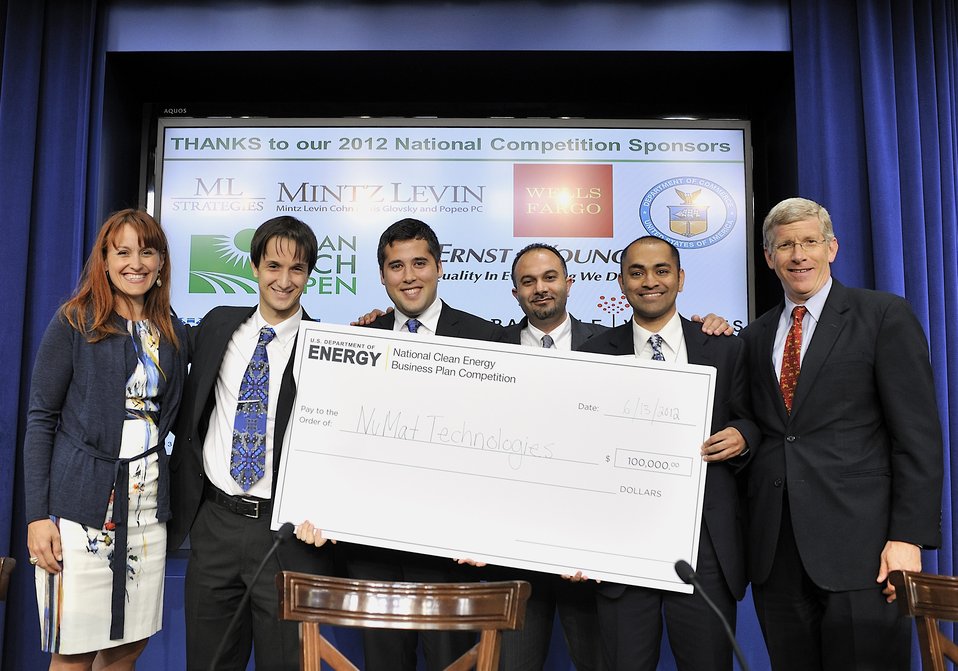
National Clean Energy Business Plan Competition

The National Clean Energy Business Plan Competition inspired nearly 300 university teams across the country to create new businesses to commercialize promising energy technologies developed at U.S. universities and the National Laboratories.

After pitching their business plans to panels of judges at the regional semifinals and finals, six teams advanced to the national competition for a chance to compete in the grand prize pitch to a panel of experts.

NuMat Technologies from Northwestern University, the National Clean Energy Business Plan Competition grand prize winner.